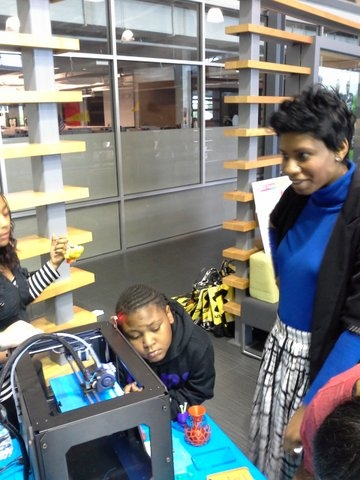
Sept 14 2013 Girls in STEM Summit

Director Dot Harris speaks to middle and high school girls in Baltimore at the Girls in STEM Summit this Sept.